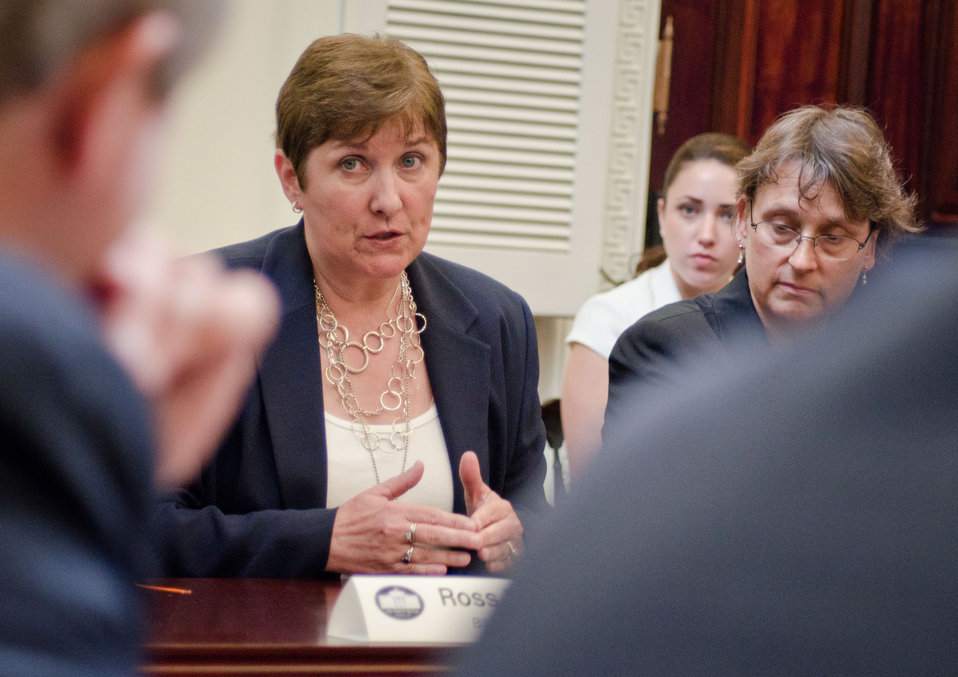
Ruth Hambleton, Annie’s Project, Woodlawn, Illinois, attended a meeting at the White House, in Washington, DC, on July 6, 2011. She was asked to participate along with President Barack Obama, Agriculture Secretary Tom Vilsack, the President's Domestic Policy Adviser Melody Barnes and rural communities leaders from across the country for the White House Rural Champions of Change event to strengthen rural communities and promote economic growth. Ruth Hambleton is the founder of Annie’s Project in Illinois. Annie’s Project is a non-profit organization that concentrates on education for Farm Women. Ruth works with women across the state of Illinois through her workshops and educational efforts. Her focus is to educate women about risk management and making sound management decisions. Ruth works hard to empower farm women across the state to be better business partners. Her current focus is on reaching women of small acre, non-traditional and value-added farm operations. Ruth’s efforts to launch Annie’s Project have resulted in the adoption of the Annie’s Project model for farm women business management education by over 25 states to date.